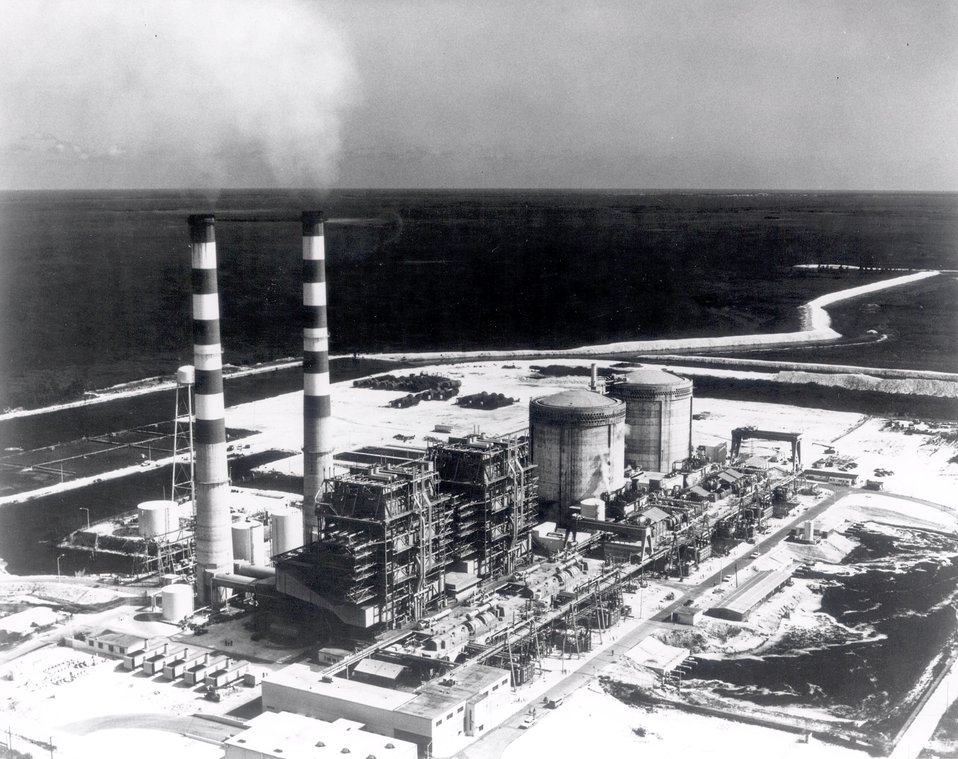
Turkey Point...Aerial view looking south showing Florida Power & Light Company's cooling canal system at its Turkey Point Generating Station in deep South Dade County. Circa 1974.